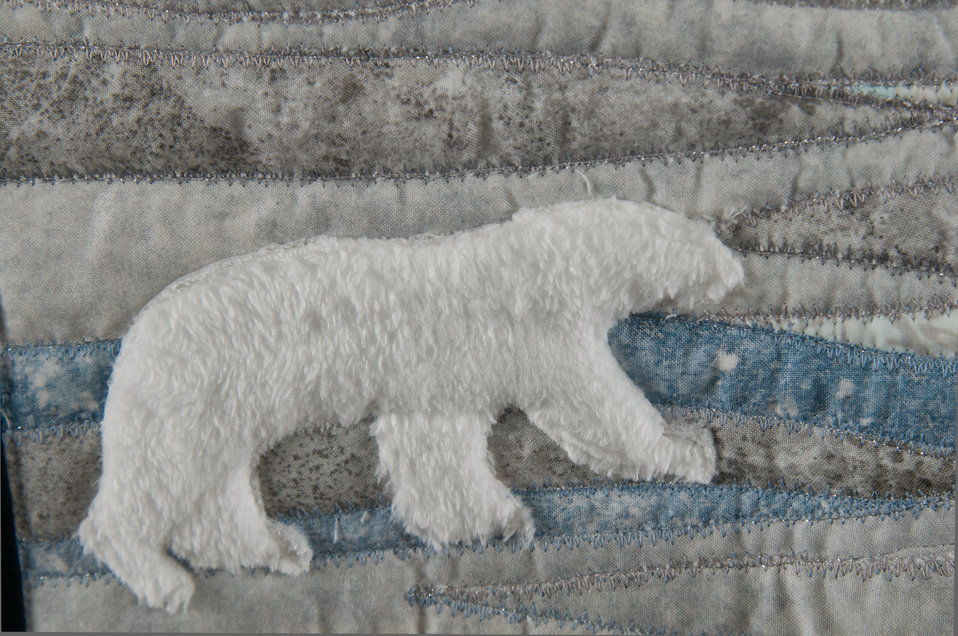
Online Viewer's Choice entries of the 2013 Art & Agriculture, Tuesday, July 9, 2013, in the South Building, Washington, D.C. Themes were expressed by employees from across the department and the contest was open to full-time and part-time USDA employees. Winning artwork will be displayed till the end of the year. U.S. Artistic expression is a creative outlet that is vital for an individual to grow and develop.